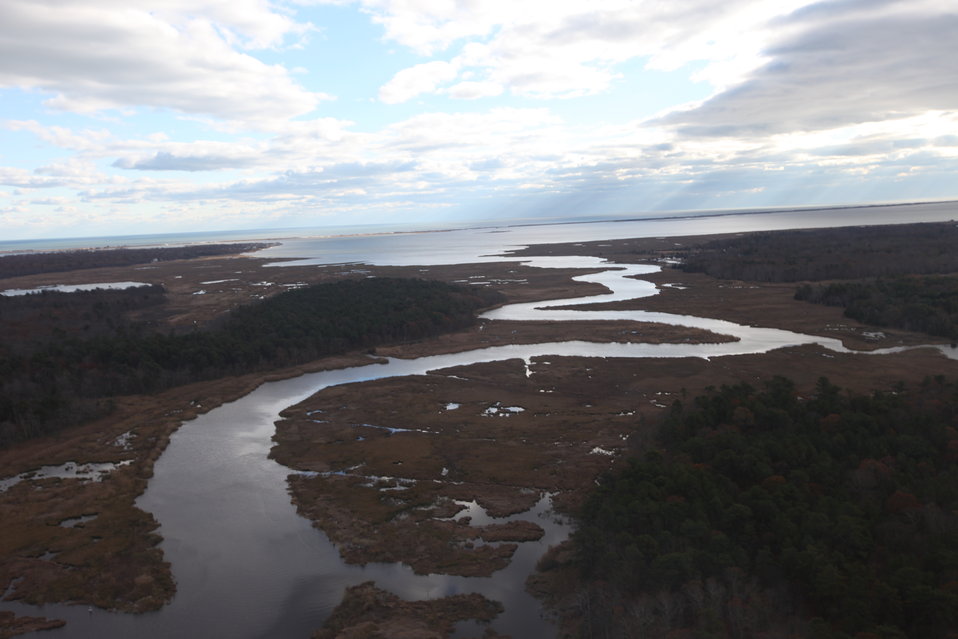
Aerial view of Wertheim National Wildlife Refuge after Hurricane Sandy (NY)

A view from the air of Wertheim National Wildlife Refuge on Long Island New York in the aftermath of storm Sandy.